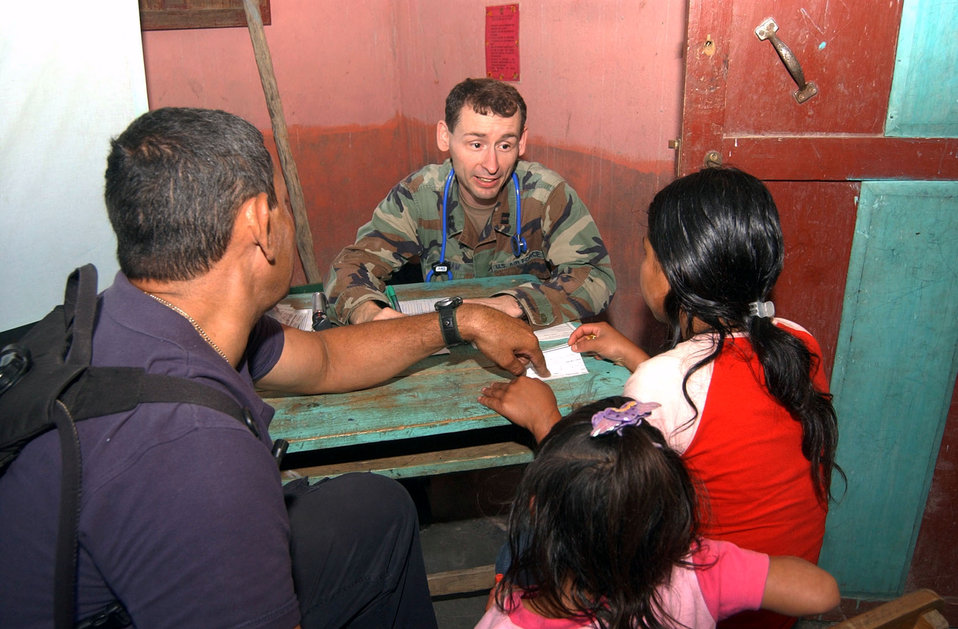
Medical element helps Honduran village

Capt. (Dr.) William Ingram talks to a patient with the help of interpreter Rafael Castro during a Medical Readiness Training Exercise June 29 in El Horno, Honduras. The medical team saw 1,072 patients during the two-day mission. Captain Ingram is a physician's assistant with the Medical Element at Soto Cano Air Base, Honduras.